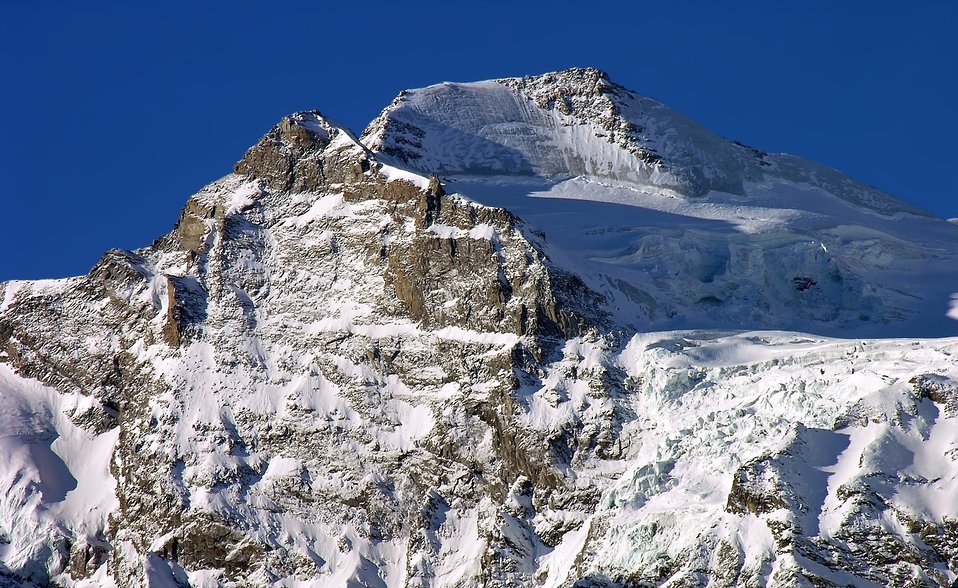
Italiano: La Testa della Tribolazione